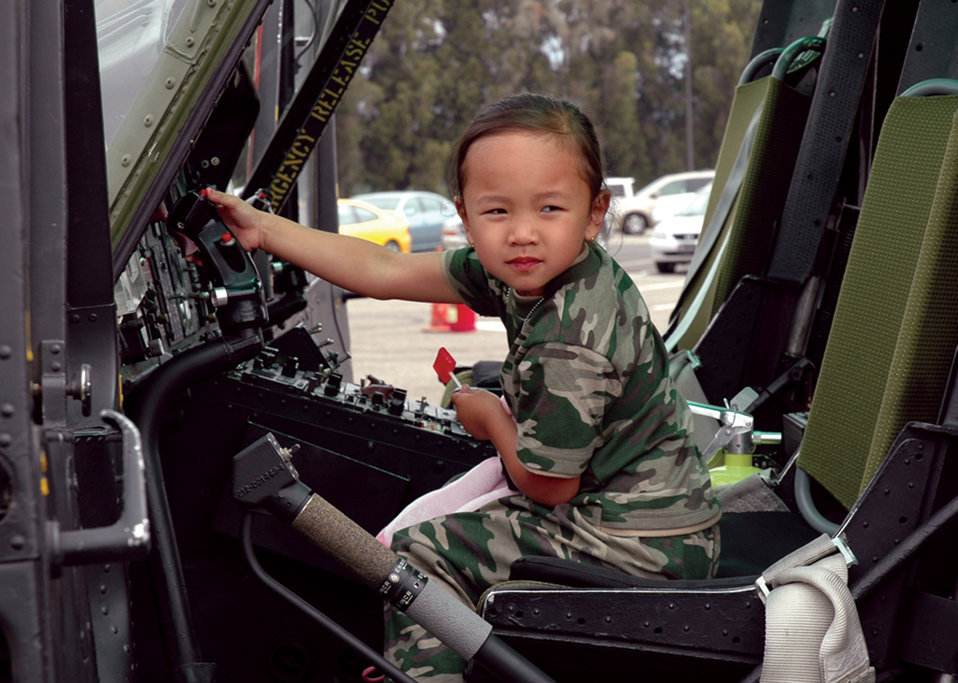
Little deployer

VANDENBERG AIR FORCE BASE, Calif. -- Malina Jaralba sits in the cockpit of a UH-1N Huey helicopter during a